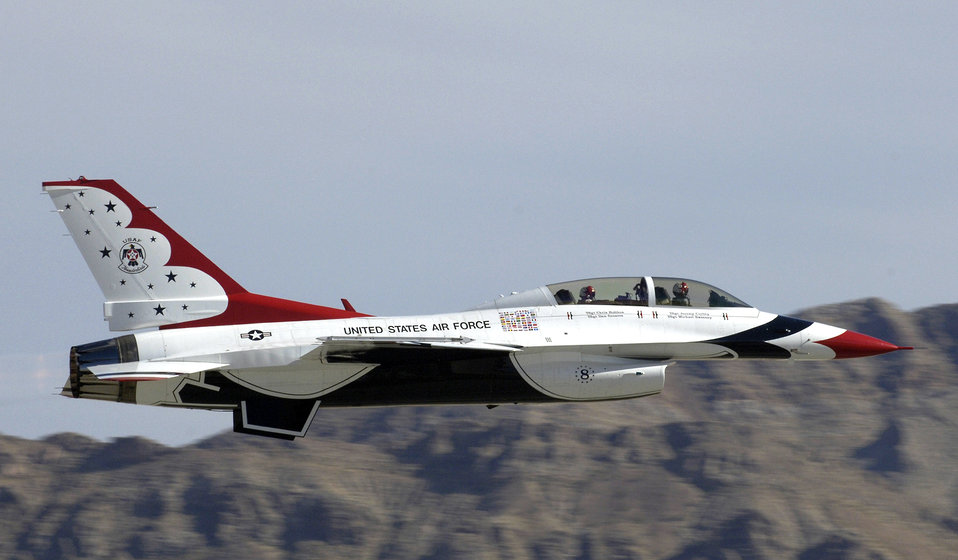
Thunderbird flight

Capt. Tad Clark and Kenny Schrader, driver of the Air Force #21 Wood Brothers Ford Fusion, take off for an orientation flight in an F-16 Fighting Falcon Thunderbird, Thursday, Mar. 9, 2006. Captain Clark is an advance pilot/narrator for the Thunderbirds.